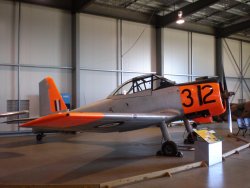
Unaipon 00:10, 21 October 2007 (UTC)